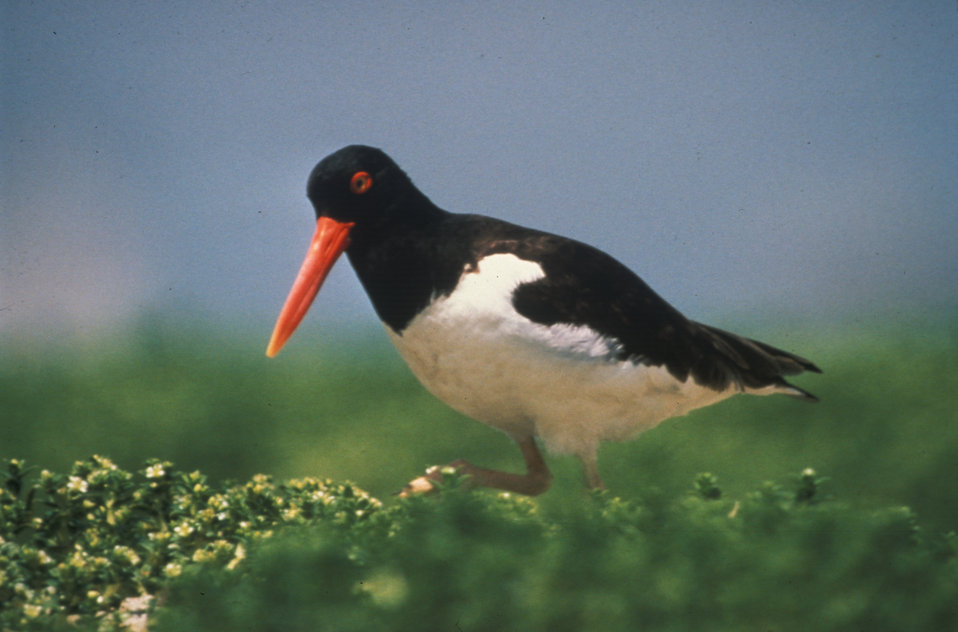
American Oystercatcher

The American oystercatcher is just one of the species at Blackwater National Wildlife Refuge that could be affected by climate change and sea level rise.